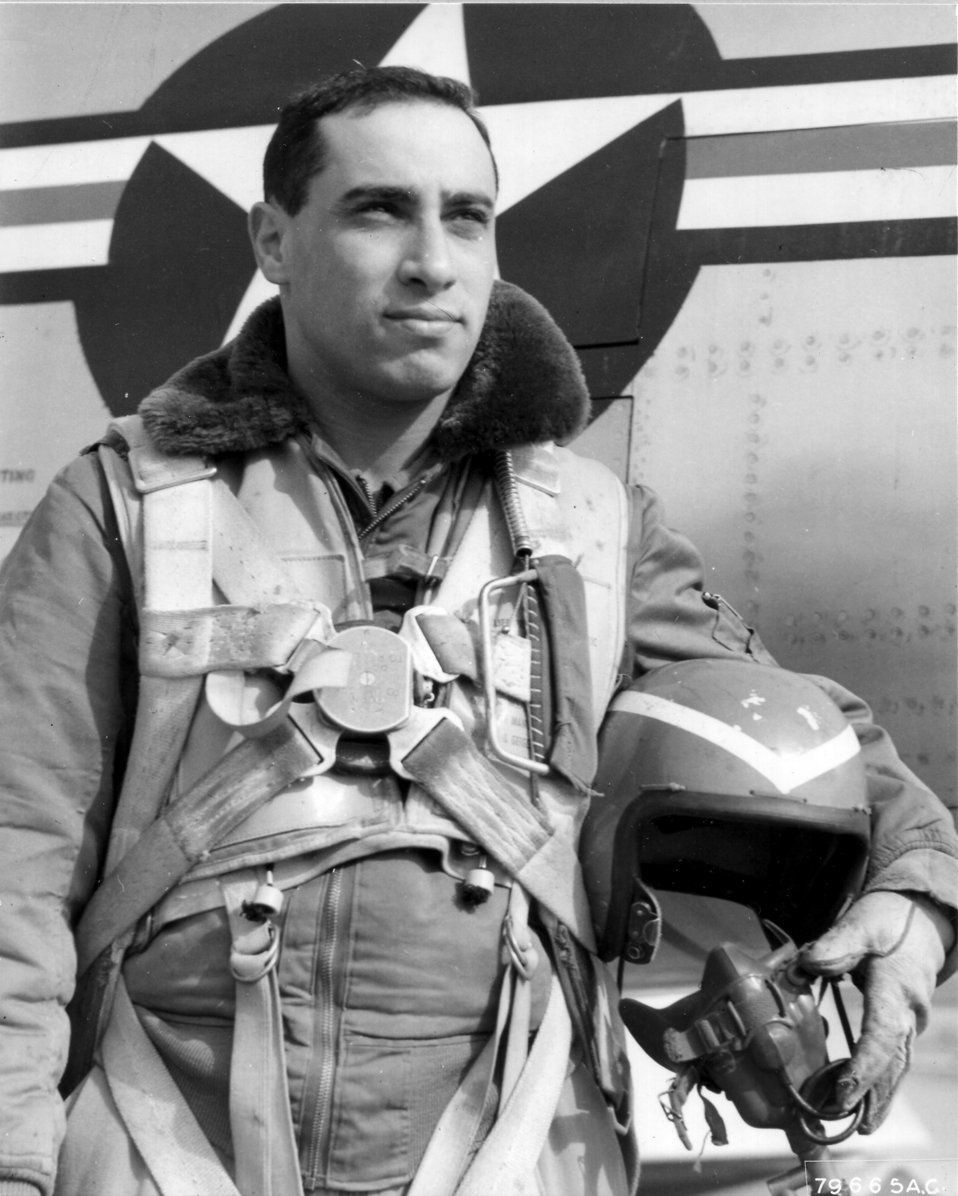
James Jabara

1940's -- James Jabara